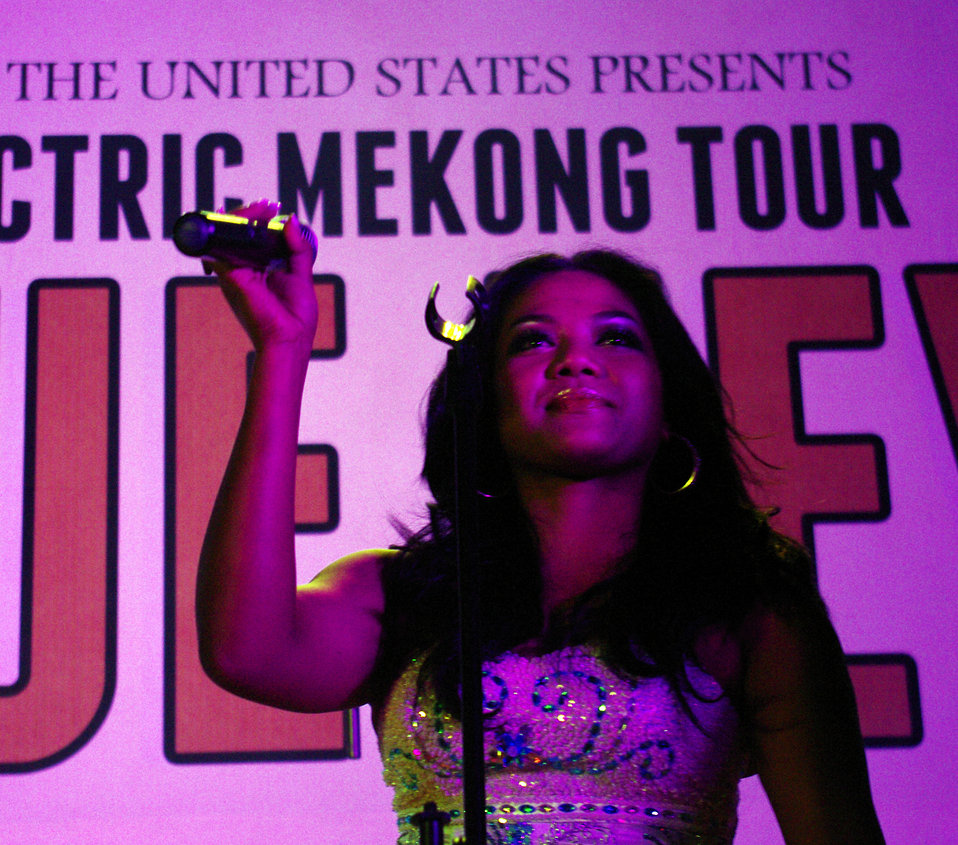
PEPFAR, U.S. Embassy Host Dengue Fever Concert in Hanoi